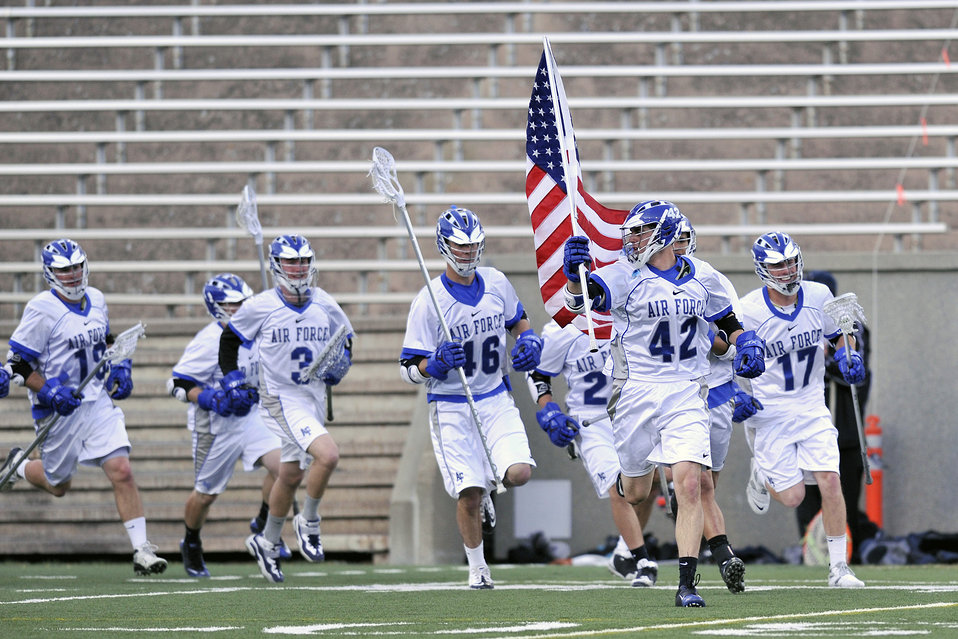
Falcons vs. Buckeyes

Falcons freshman Matt Puleo leads the Falcons onto the field as they meet the Ohio State Buckeyes during a lacrosse match April 17, 2011, at Falcon Stadium in Colorado Springs, Colo.